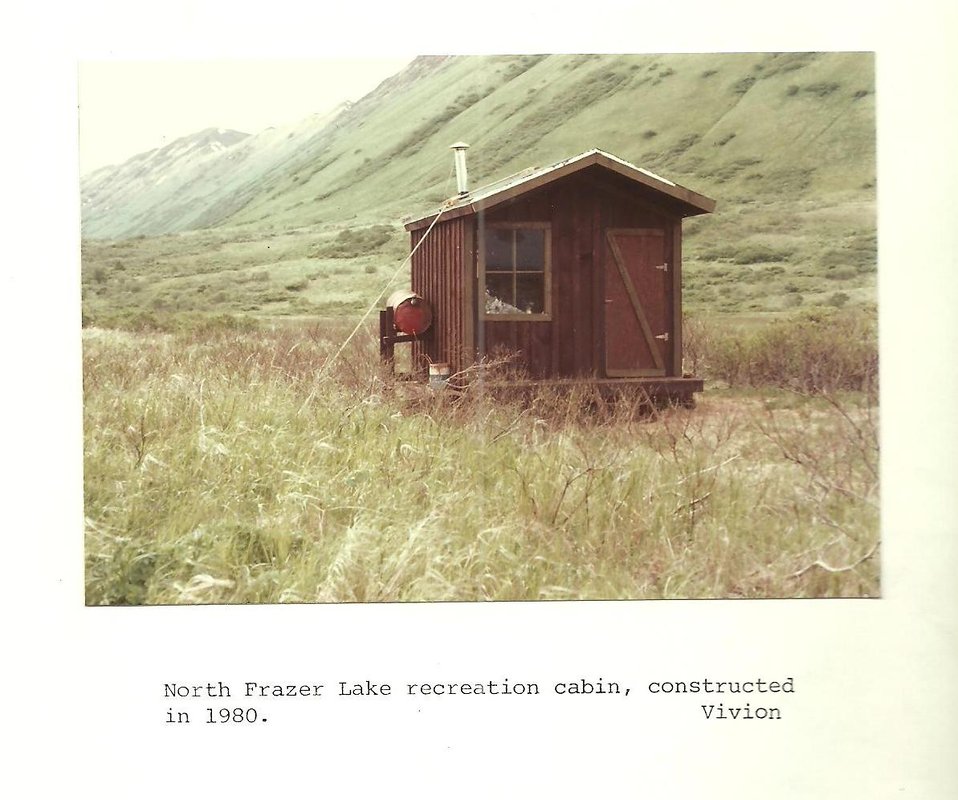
(1980) North Frazer Cabin

Credit: USFWS

Source and Contact: Kodiak National Wildlife Refuge